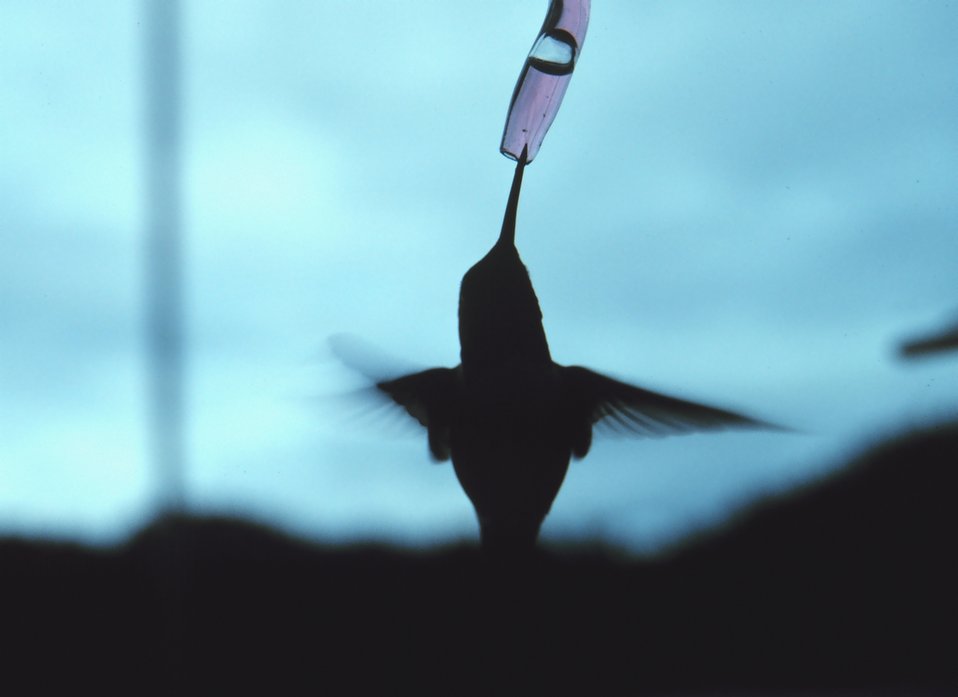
Hummingbird at Little Port Walter.